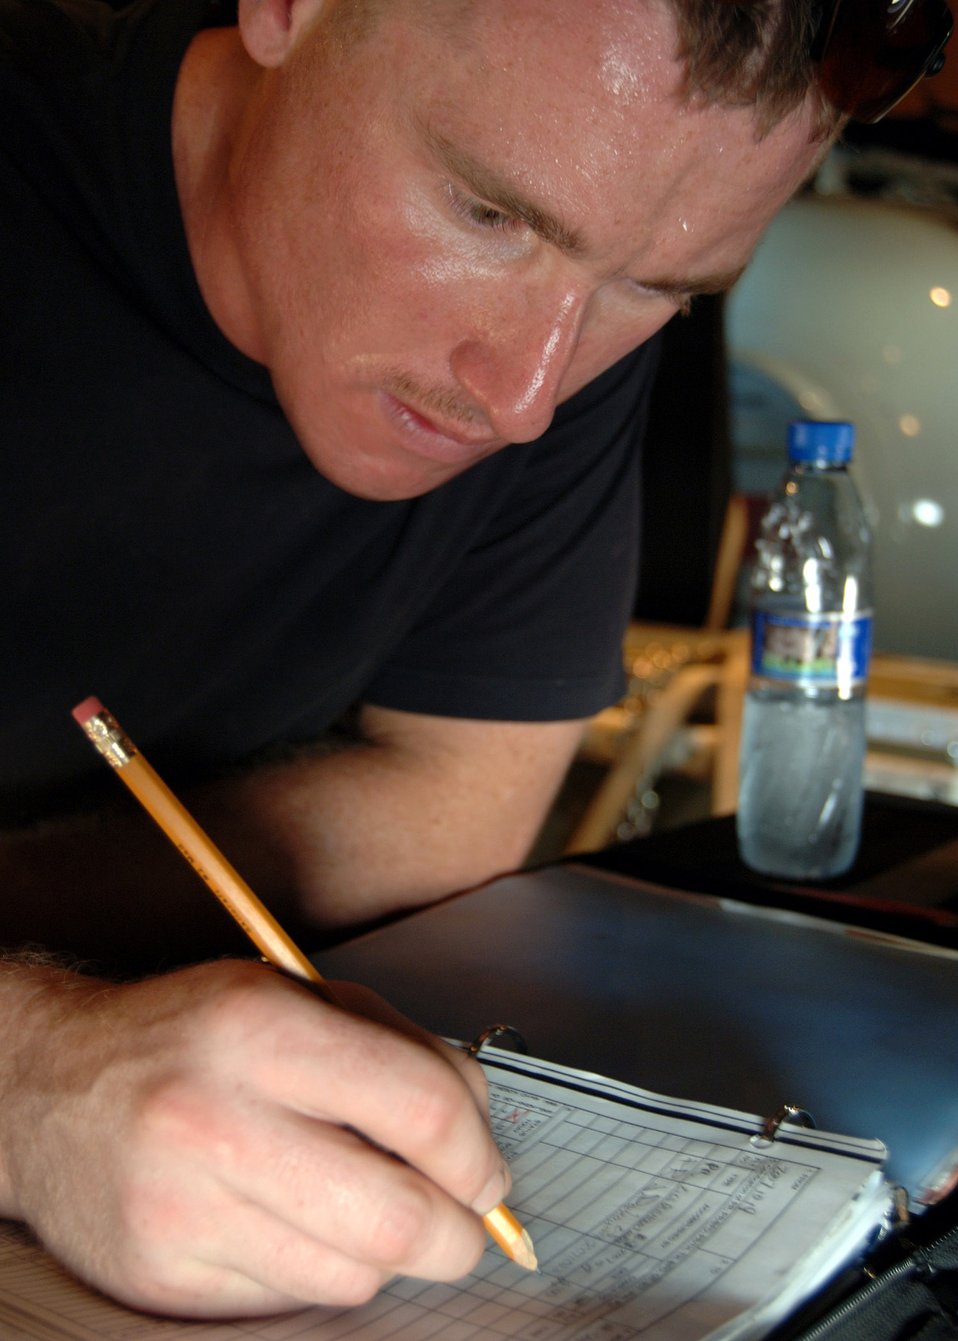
Preflight inspection

Staff Sgt. James Rodman documents a preflight inspection that was completed on a C-130 Hercules Oct. 22 at Camp Lemonier, Djibouti. Sergeant Rodman is a crew chief for the 81st Expeditionary Rescue Squadron.